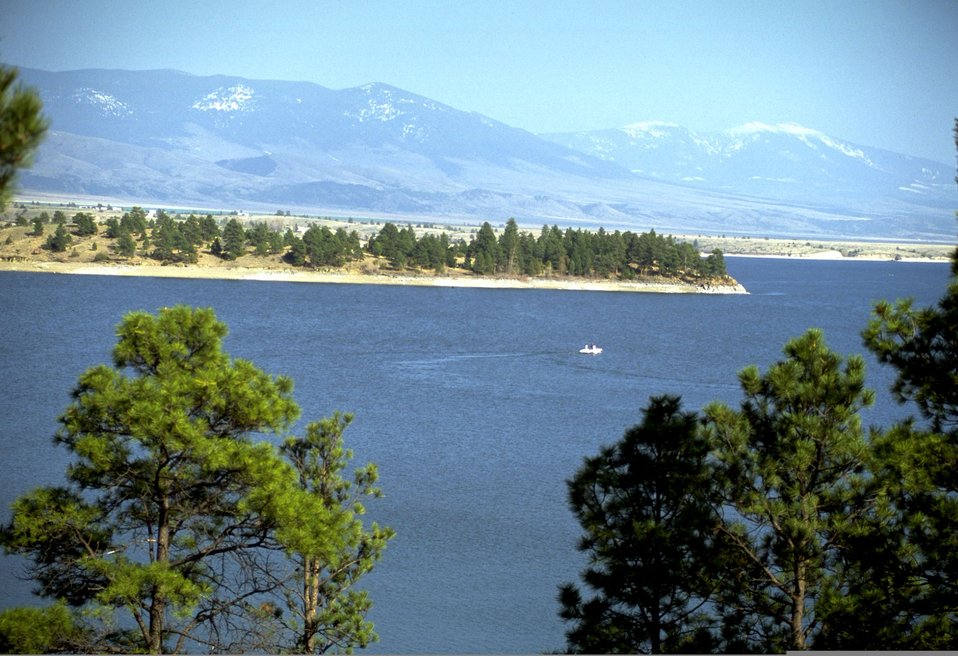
Canyon Ferry lake